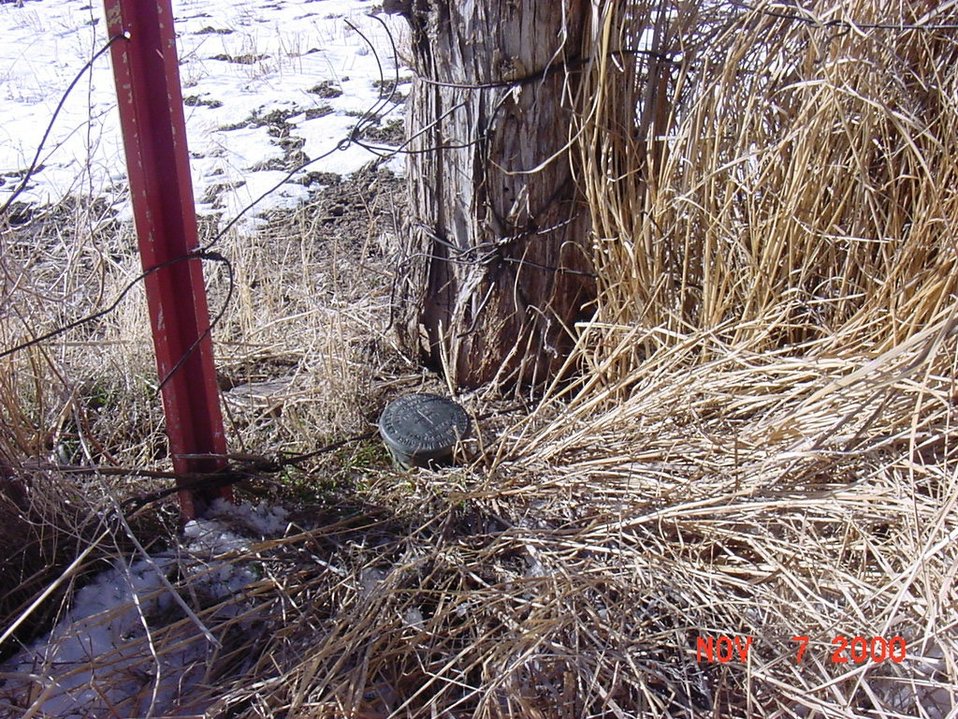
Cadastral Surveys Idaho Bureau of Land Management